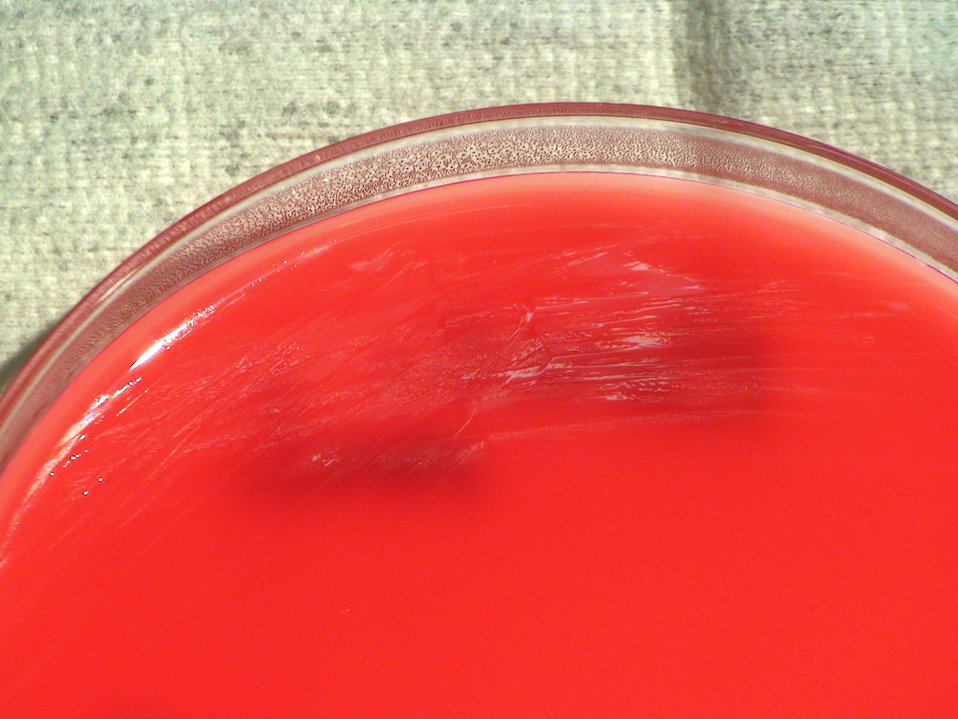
This photograph depicts a close view of the colonial morphology displayed by Gram-negative Brucella melitensis bacteria, which was grown on a medium of sheep's blood agar (SBA), for a 24 hour time period, at a temperature of 37�C. See also, PHIL 12398 for a view of this bacterial specie, colonized on modified Thayer-Martin agar, at the same temperature, but for a much longer time period (72hr); PHIL 12399, for B. melitensis bacteria grown also, on SBA at the same temperature, but also, for a greater time period (72hr); PHIL 12400, for B. melitensis bacteria grown on SBA at the same temperature, but for twice the time period (48hr). Brucella spp. bacteria are responsible for causing the disease known as brucellosis.